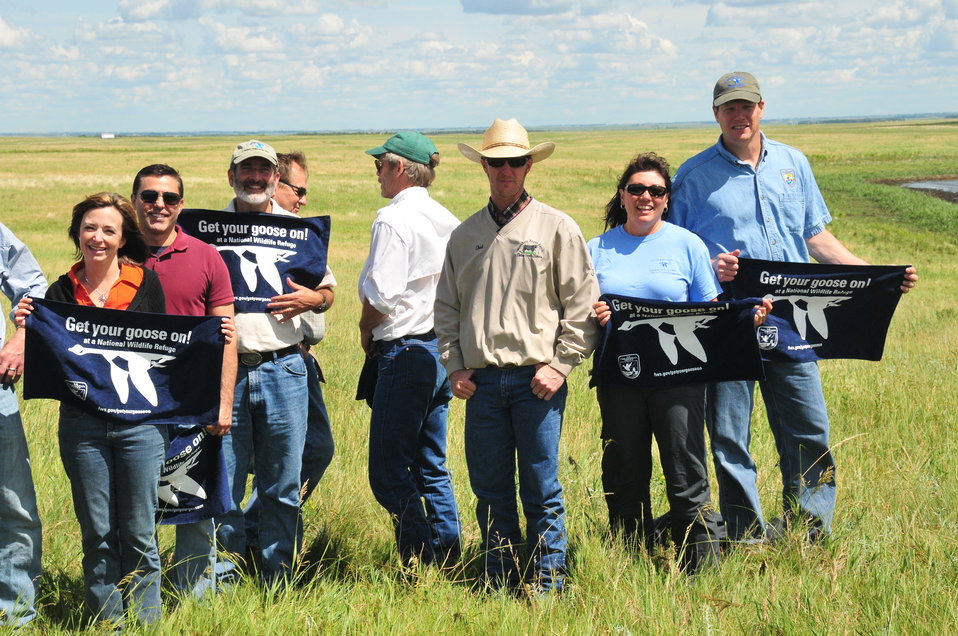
Get Your Goose On!

The national meeting for regional chiefs of the National Wildlife Refuge System is held three times a year in different locations around the country. This 2012 meeting took place in McPherson County, South Dakota, and focused on the Dakota Grassland Conservation Area.

This photo was taken on the Wade Weiszharr and Family Ranch, which contains perpetual U.S. Fish and Widlife grassland and wetland easements. This site is also located in the heart of Prairie Pothole Region, making it extremely productive migratory bird habitat and a great place to “Get your goose on!”

Here is a group shot taken on the Wade Weisszhauer Ranch!